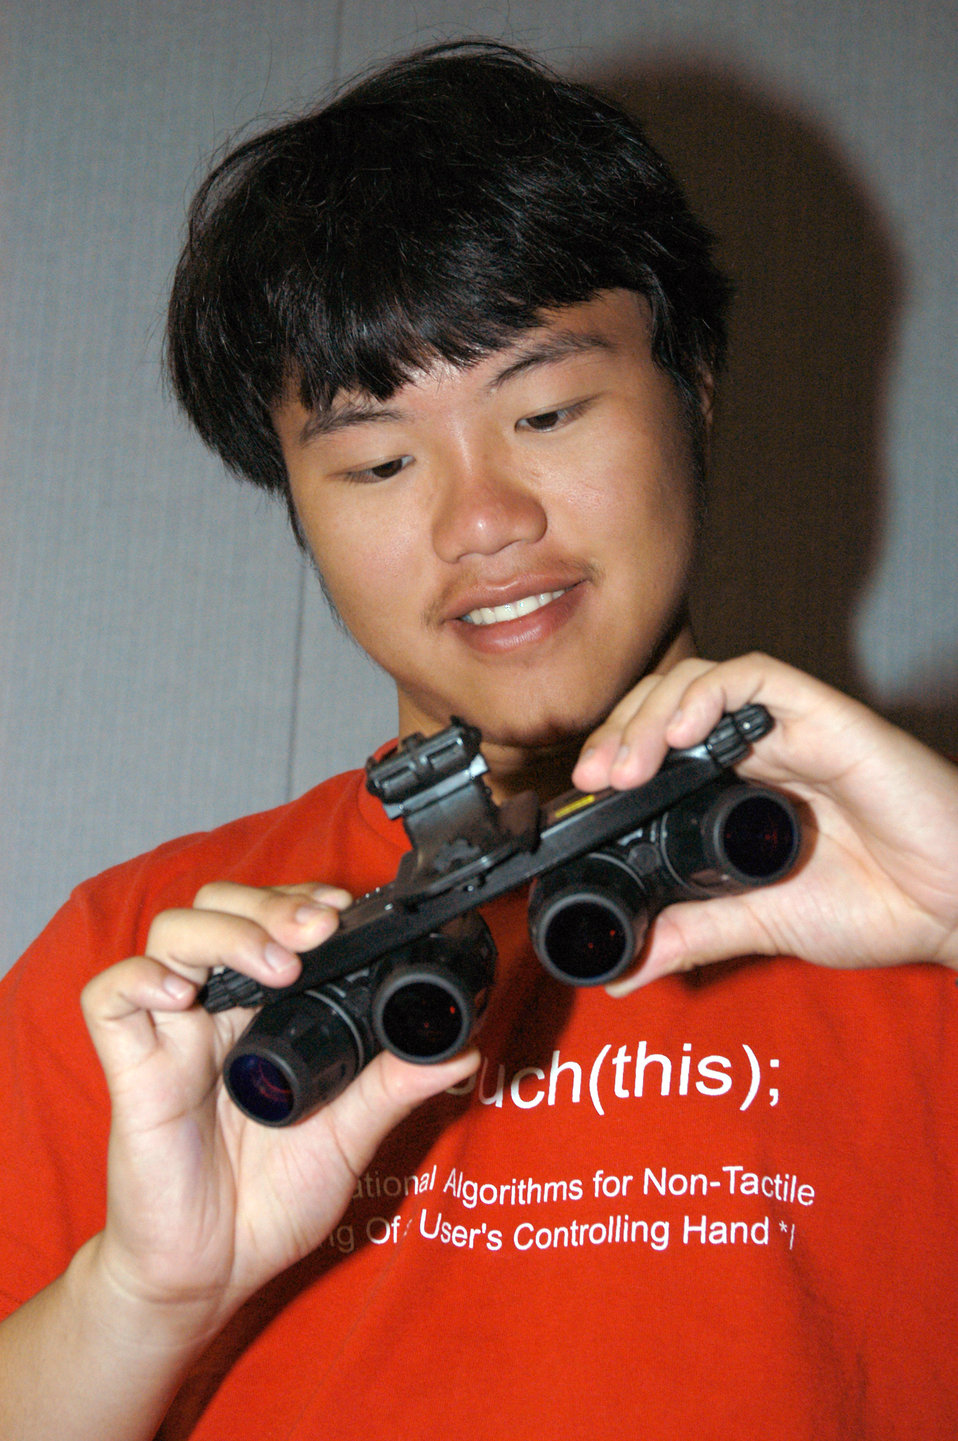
He

WRIGHT-PATTERSON AIR FORCE BASE, Ohio -- Ray He tours the human effectiveness panoramic night-vision goggles division at the Air Force Research Laboratory here. He won the Century of Flight Award grand prize of $6,000. The prize was for his paper titled,